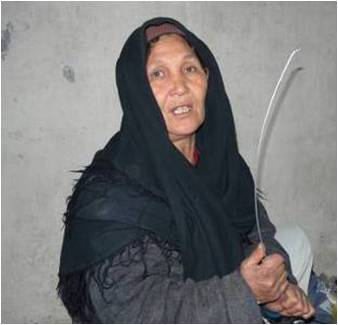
Residents Weave Gabions for Community Projects

Women and disabled community members in Northern Afghanistan face a range of cultural and social barriers when seeking employment. As a result, they are often amongst the poorest members of the community. In collaboration with Government Line Directorates, USAID’s Incentives Driving Economic Alternatives for the North, East, and West (IDEA-NEW) has worked to address this problem by training 423 women and men in gabion weaving in the Pul–i-Khumri district of Baghlan Province. Gabions are key structural components for building protection walls along waterways to prevent flooding and erosion.
Women participating in the project are breadwinners for their families; approximately 100 are also disabled. All 105 men participating in the project are disabled. Teaching these marginalized community members gabion-weaving techniques responds to the growing need for gabions across northern Afghanistan, resulting in sustainable income generation for program participants. Gabions woven in-country are also of higher quality and stronger than those imported from abroad.
According to the Baghlan Department of Women’s Affairs (DOWA), many unemployed women ask them for jobs, but because of a lack of employment opportunities in the province they have been unable to meet their needs.
The Baghlan DOWA selected eligible female program participants and located training and workspaces, while IDEA-NEW provided raw materials, trainers, and a 250 Afghani per-day stipend.
As part of the infrastructure component of IDEA-NEW, USAID is implementing nine protection wall projects throughout Pul-i-Khumri District in Baghlan Province, which will require approximately 13,000 gabions, most of which will be woven by those participating in this project. Each person can complete approximately one six-sided box per day and receives 250 Afghanis (approximately $5).